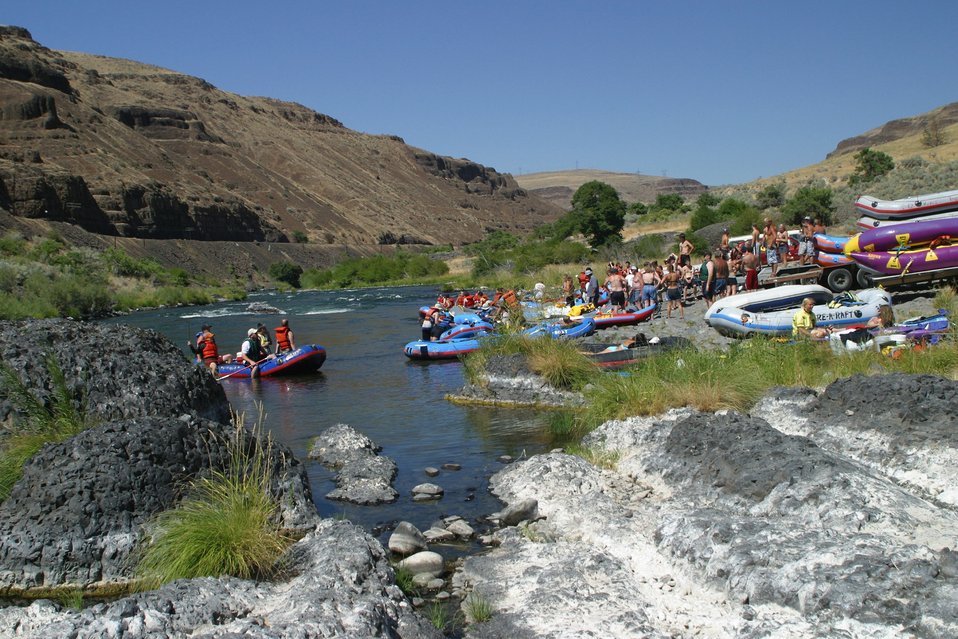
Sandy Beach is the last take out before Sherars Falls. All watercraft must exit the river!